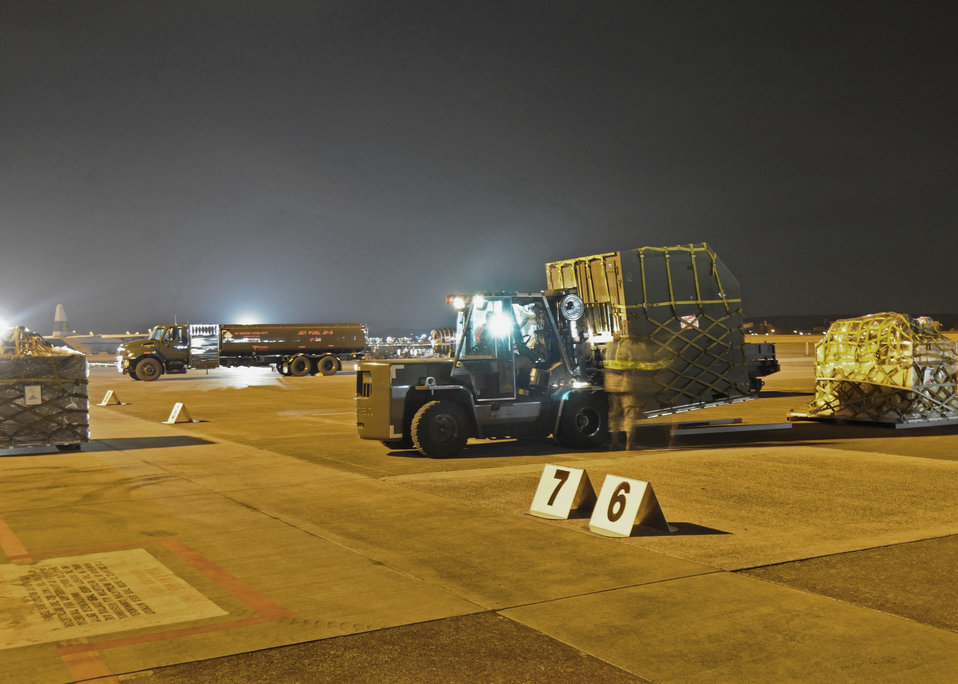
Bringing in the load

Members of the 374th Aircraft Maintenance Squadron and 730th Air Mobility Squadron prepare pallets for uploading to a C-130 Hercules during Phase I of Exercise Beverly Morning 09-03 March 31 at Yokota Air Base, Japan. Base personnel will be conducting the exercise March 30 through April 3 to maintain operational readiness.